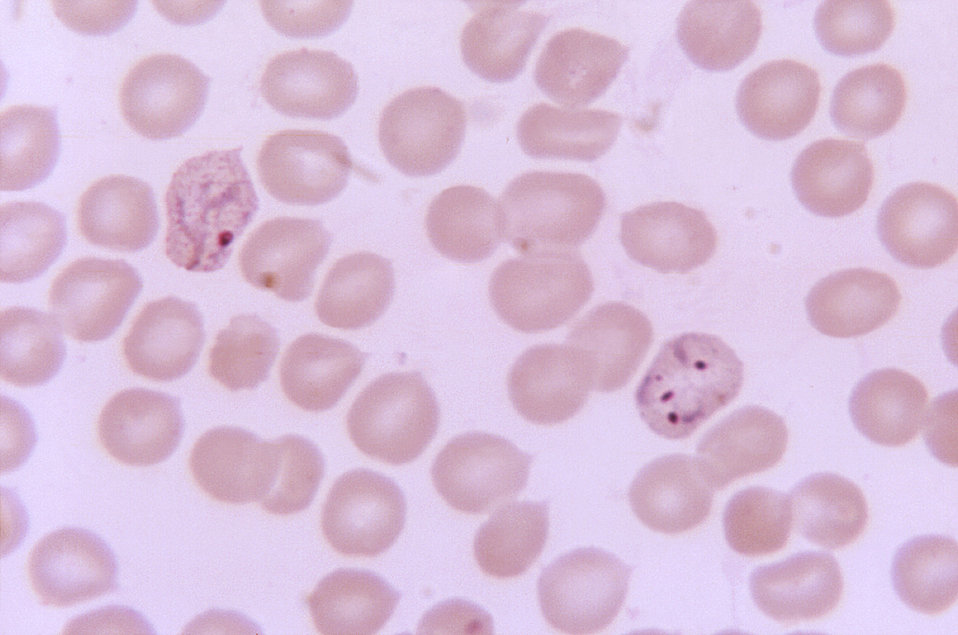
Magnified 1125X, this thin film photomicrograph of a blood smear, revealed the presence of a triple ring-form Plasmodium vivax trophozoite on the right, and a young, growing amoeboid trophozoite on the lef, both displaying intracytoplasmic Sch�'s dots.